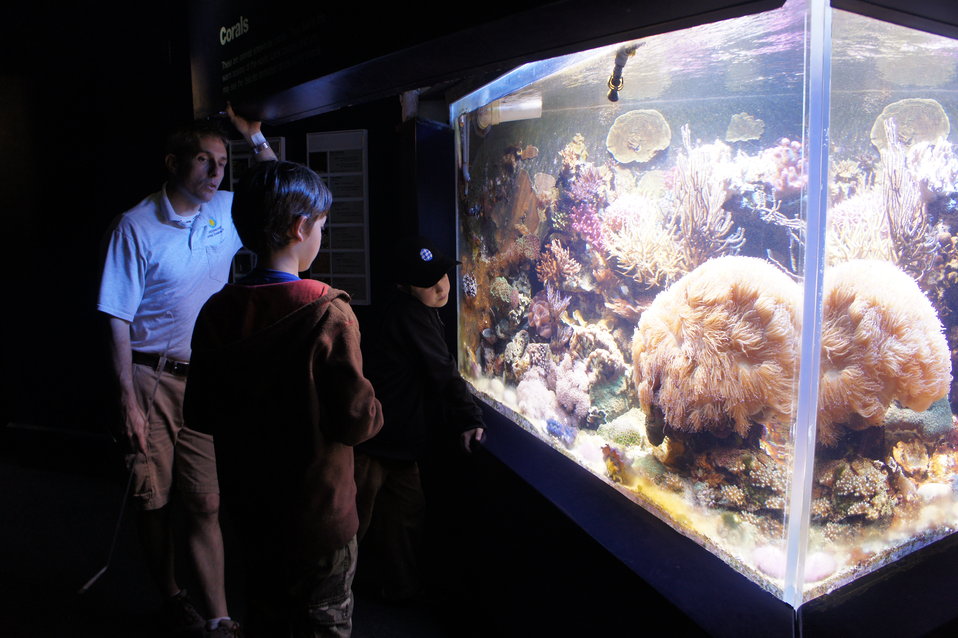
'Save the Nautilus' co-founder visits Smithsonian National Zoo

A biologist at the Smithsonian National Zoo's invertebrate exhibit talks about coral polyps with Josiah Utsch, co-founder of www.saevthenautilus.com.